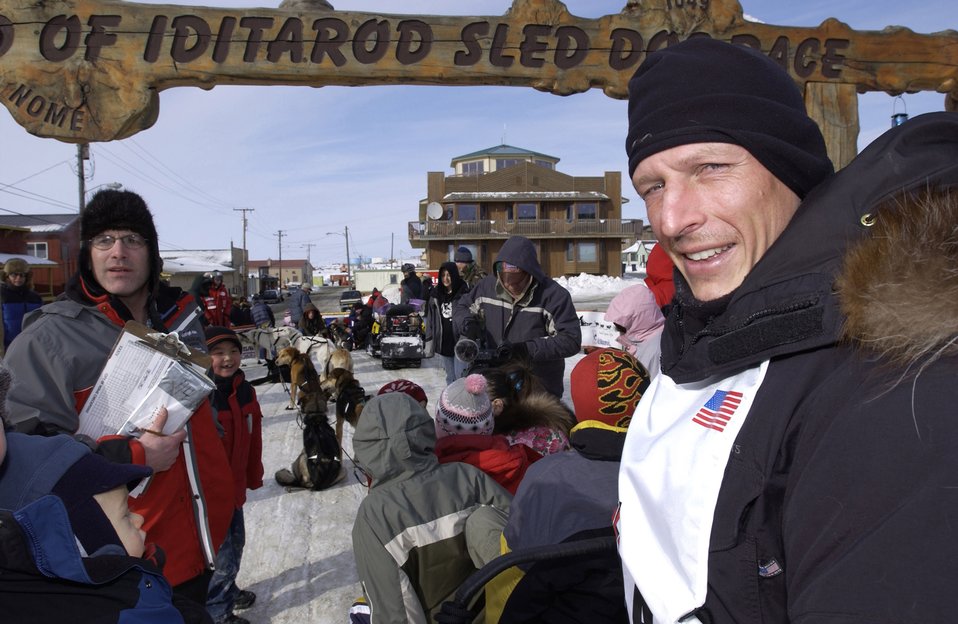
Air Force doctor finishes Iditarod with flourish

Maj. (Dr.) Thomas Knolmayer reacts to a cheering crowd at the finish line of the 2006 Iditarod Sled Dog Race on Friday, March 17, 2006, in Nome, Alaska. Doctor Knolmayer finished the 1,150-mile race across Alaska in 11 days, 22 hours and 13 minutes, bettering his time from last year by 47 hours. He is chief of surgery at the 3rd Medical Group at Elmendorf Air Force Base, Alaska.